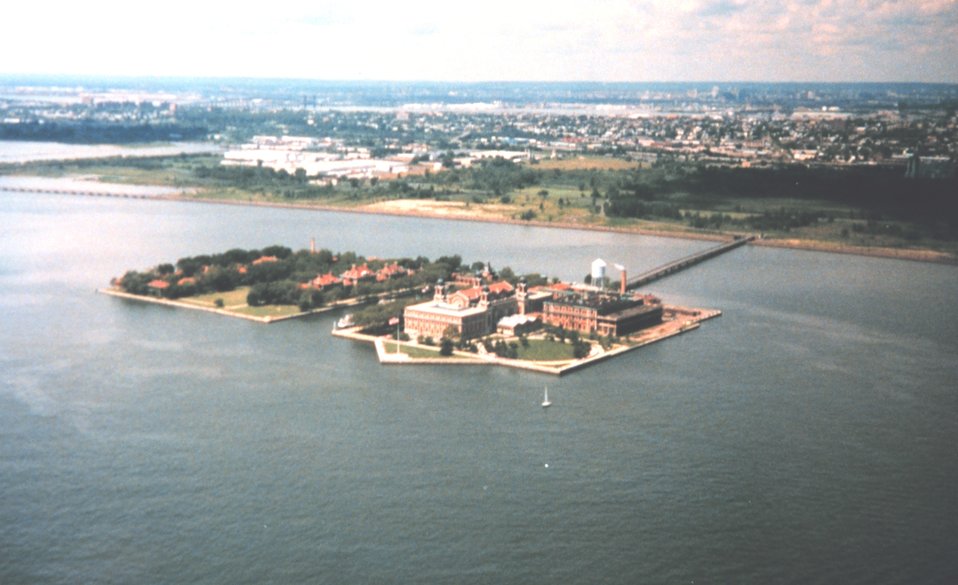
Ellis Island